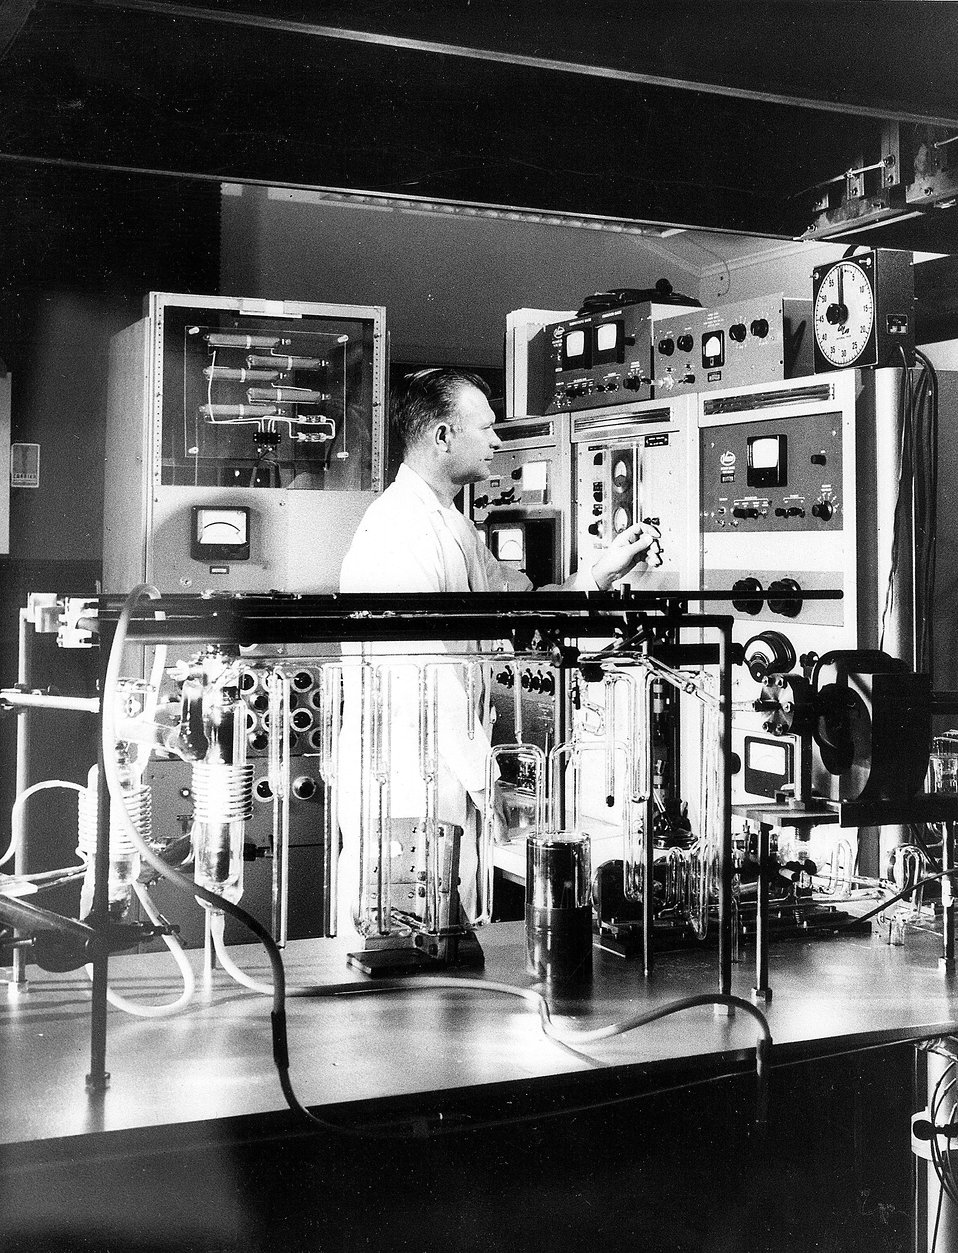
A high-sensitivity rare-gas mass spectrometer used in chemical research. c. 1963